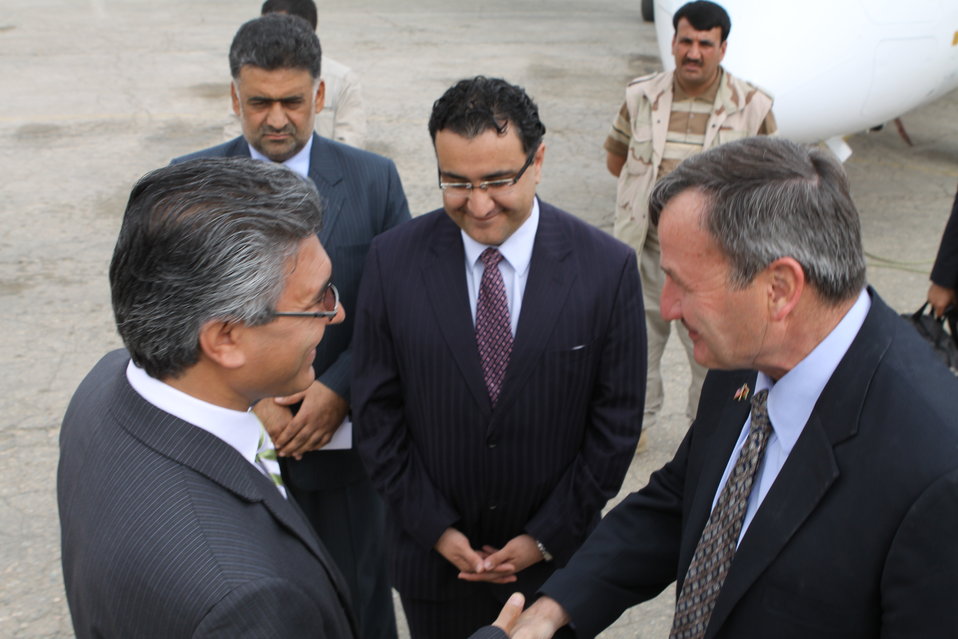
100525 Hirat Marble Conference 035